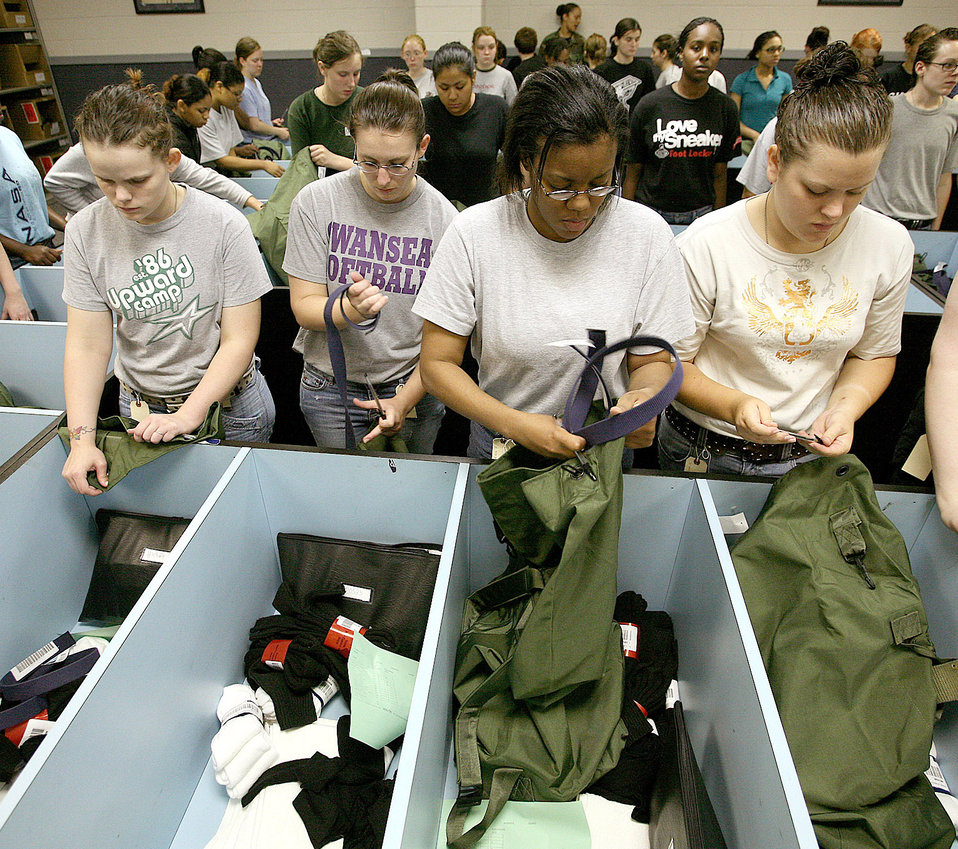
First day

Air Force basic trainees from the 331st Training Squadron's Flight 392 unload their duffel bags and check their issued items May 2 at Lackland Air Force Base, Texas. The flight's first day of Basic Military Training is May 7. They are scheduled to graduate June 15.